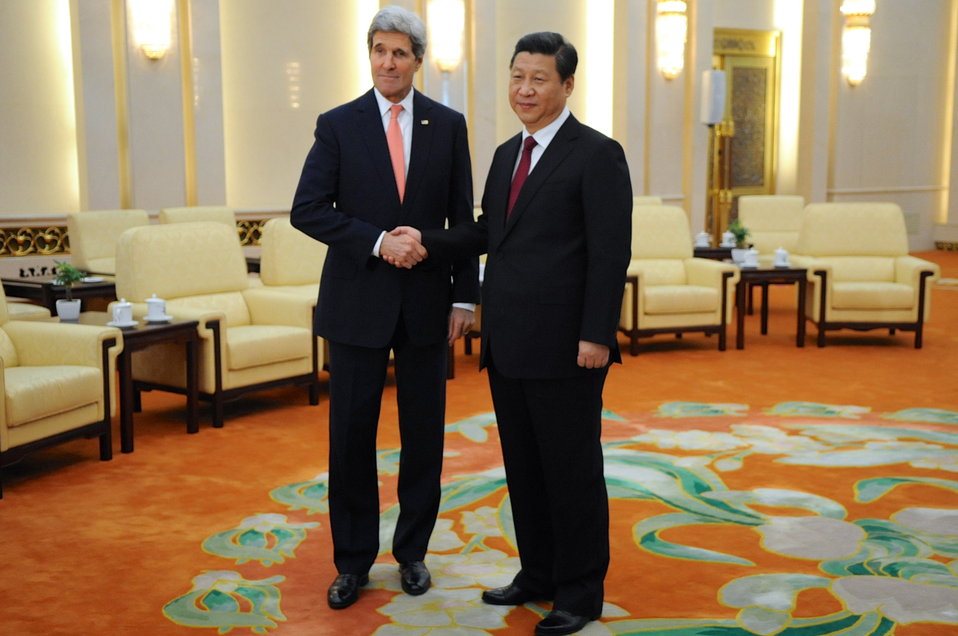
Secretary Kerry and Chinese President Xi Pose for Photographers

U.S. Secretary of State John Kerry and Chinese President Xi Jinping pose for photographers before a meeting at the Great Hall of the People in Beijing, China on February 14, 2014.